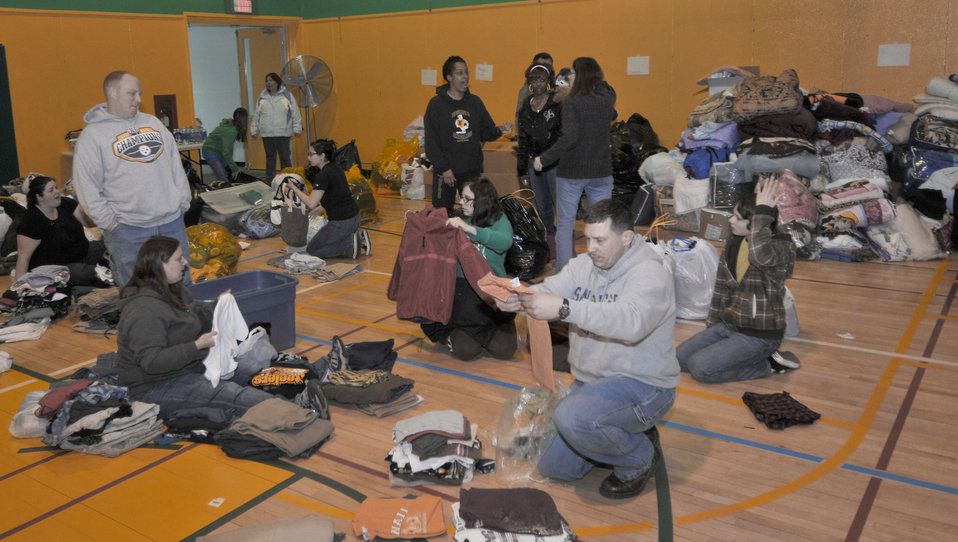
Spirit of giving unshaken in Misawa

Misawa Air Base residents deliver and sort clothing donations Mar. 14, 2011, at Edgren High School, Misawa Air Base, Japan, for the Misawa City community. Misawa AB members donated pants, shirts, shoes and jackets that will be boxed and delivered to off-base community centers.